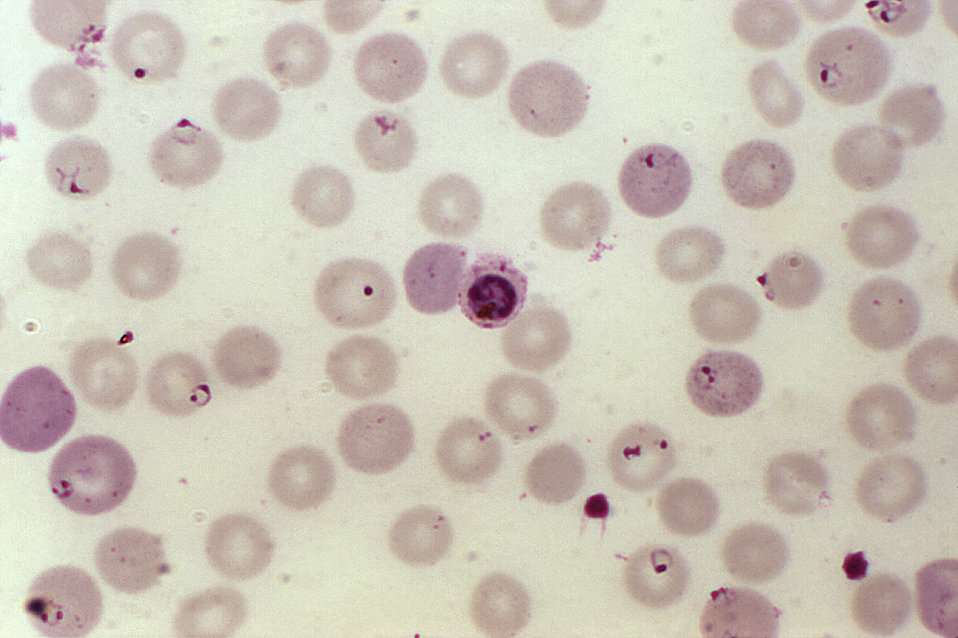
A photomicrograph of a blood smear showing erythrocytes containing developing P. falciparum parasites, magnified 1000X.